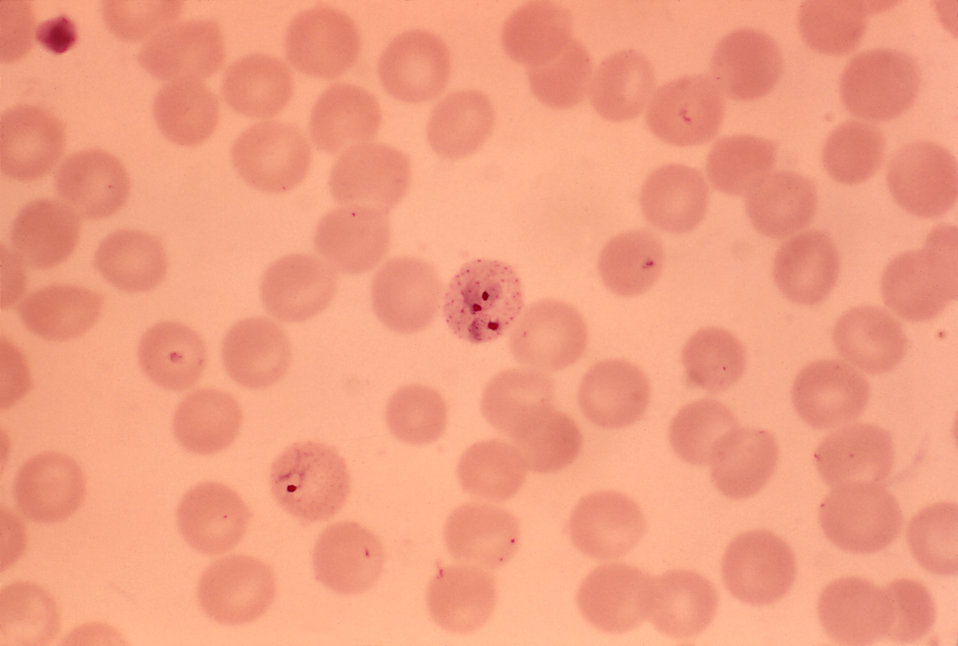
This thin film micrograph depicts ring form Plasmodium vivax infected RBCs; one RBC contains two rings.